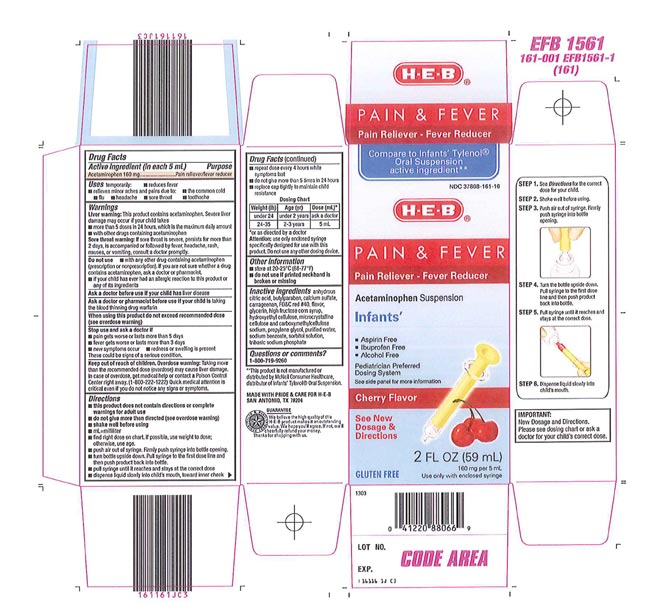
Recalled - Acetaminophen infant suspension liquid

November 1, 2013 – Product Recall – Perrigo Initiates Nationwide Voluntary Product Recall of Acetaminophen Infant Suspension Liquid, 160 Mg/5 Ml, Due to a Potential Defect with the Co-packaged Oral Syringe.